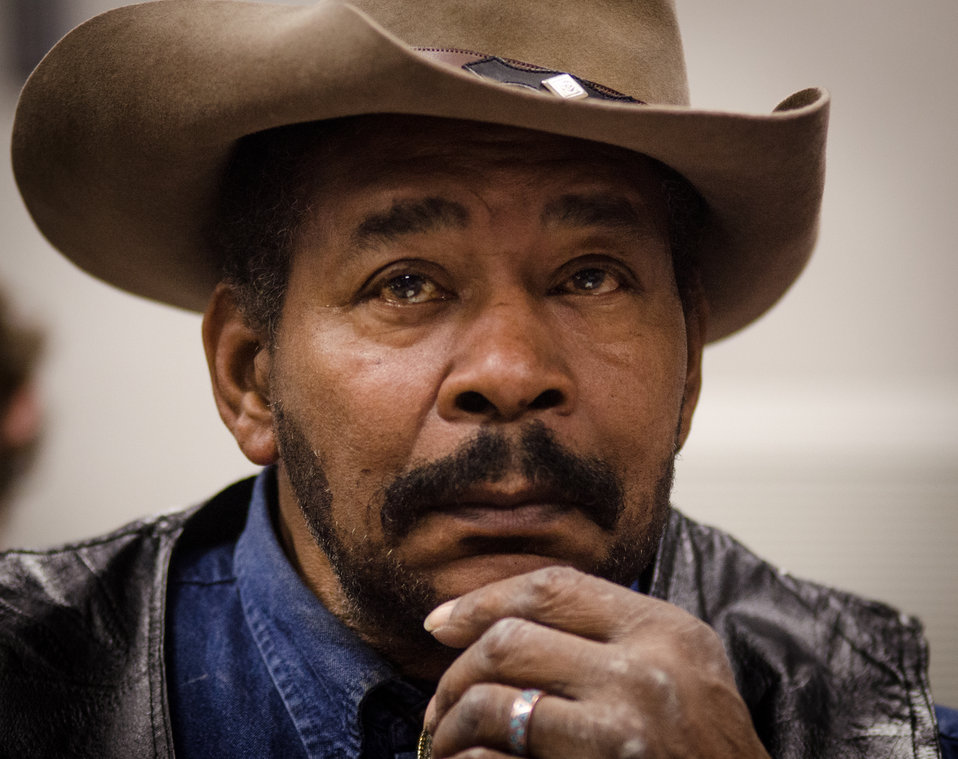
Staffers and farmers came together for the “Virginia State University (VSU), U.S. Department of Agriculture (USDA) and Virginia Farmers Working Together” outreach workshop in the VSU, L. Douglas Wilder building on Thursday, March 7, 2013, in Petersburg, VA. Farmers shared and learned new ways to do more with USDA services, and how to apply for programs that will help grow their business.